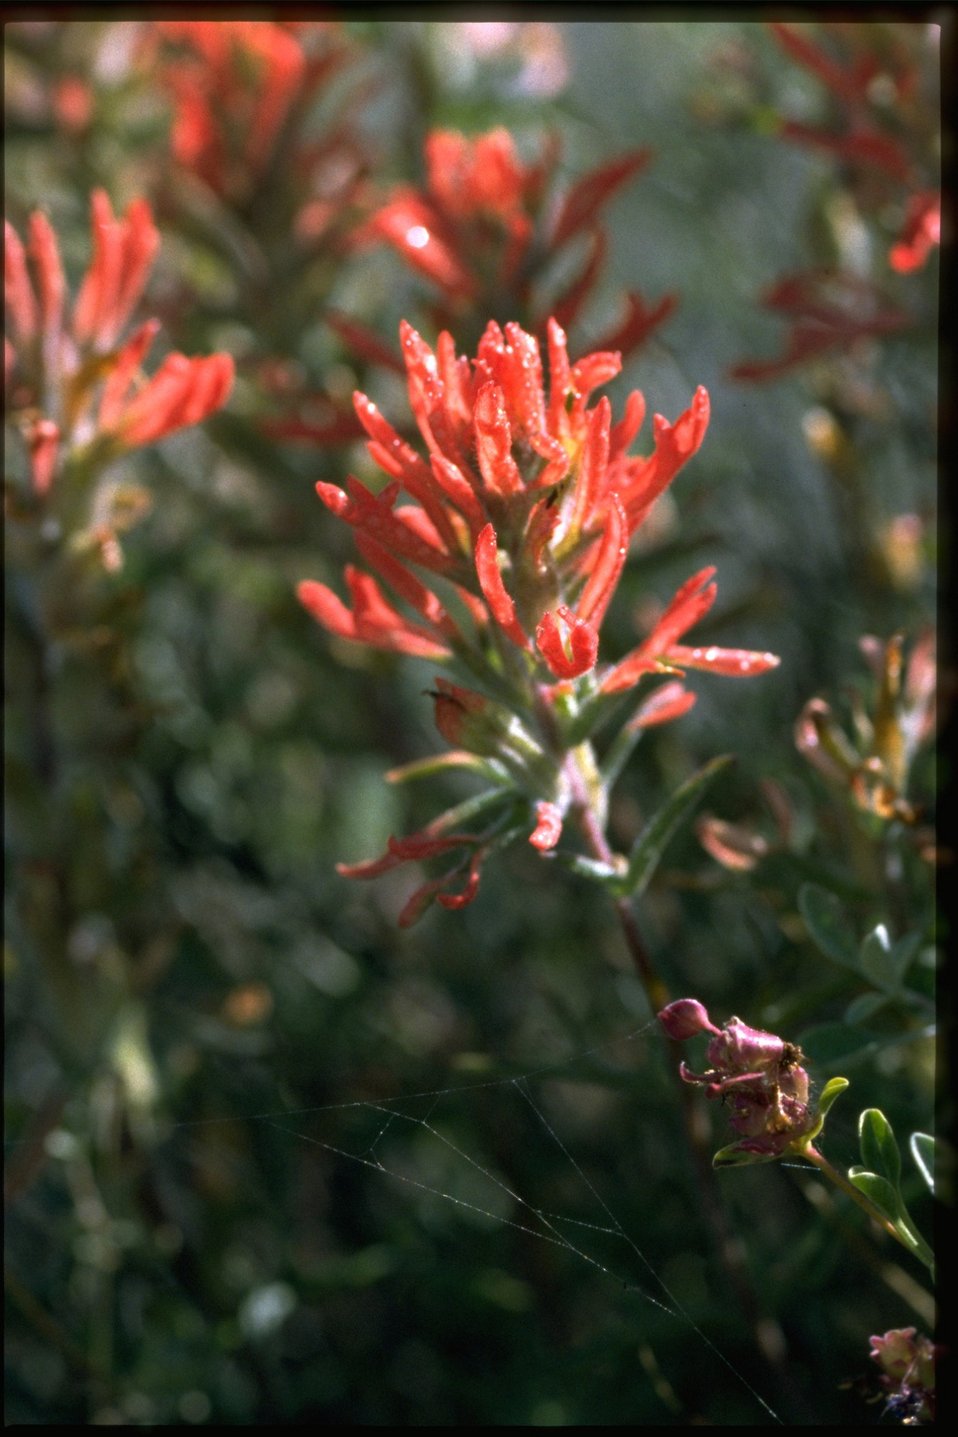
Medium shot of Castilleja.